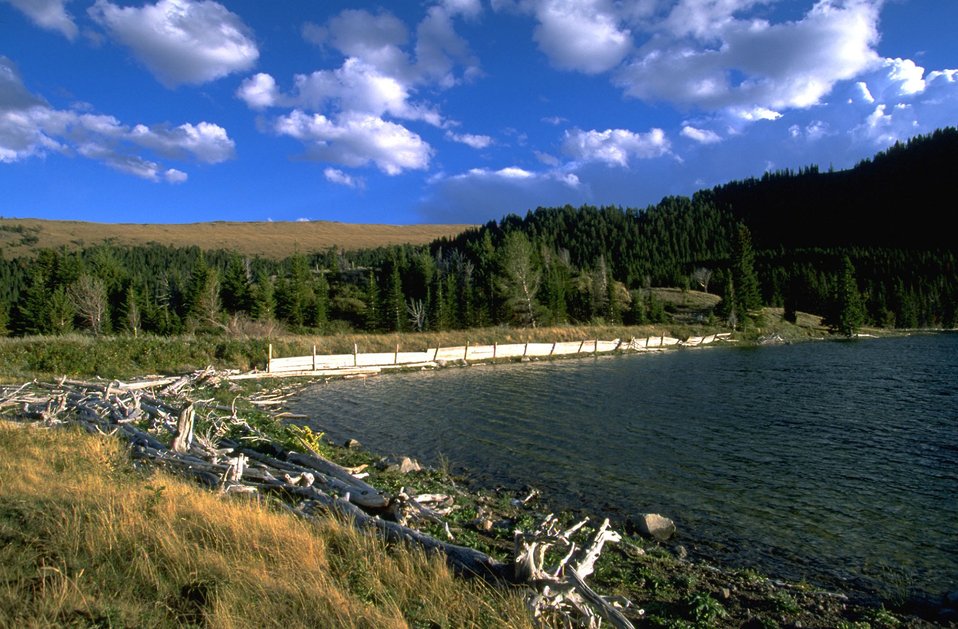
Dead wood surrounding a lake